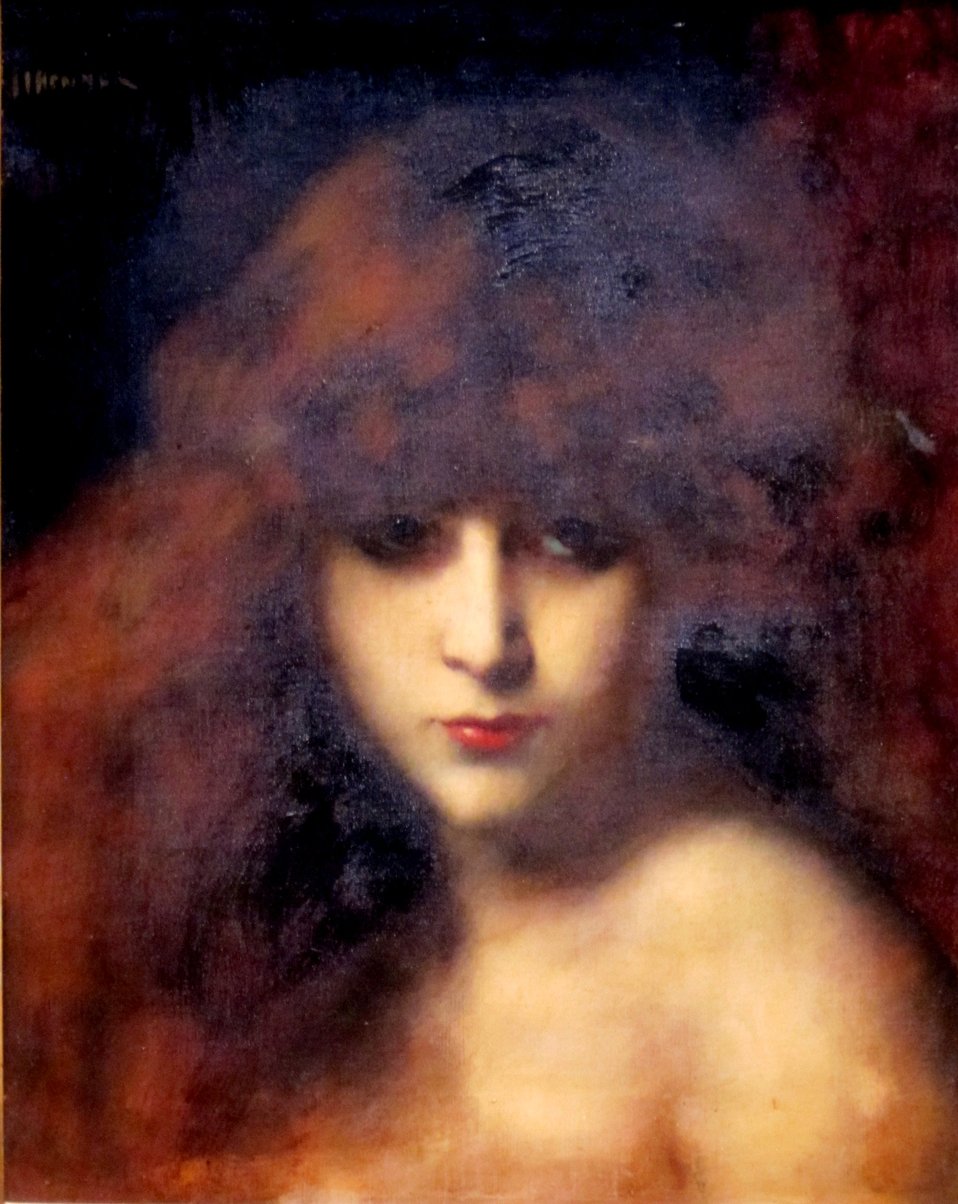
Head of a Woman, oil on canvas painting by Jean Jacques Henner, c. 1900, Dayton Art Institute